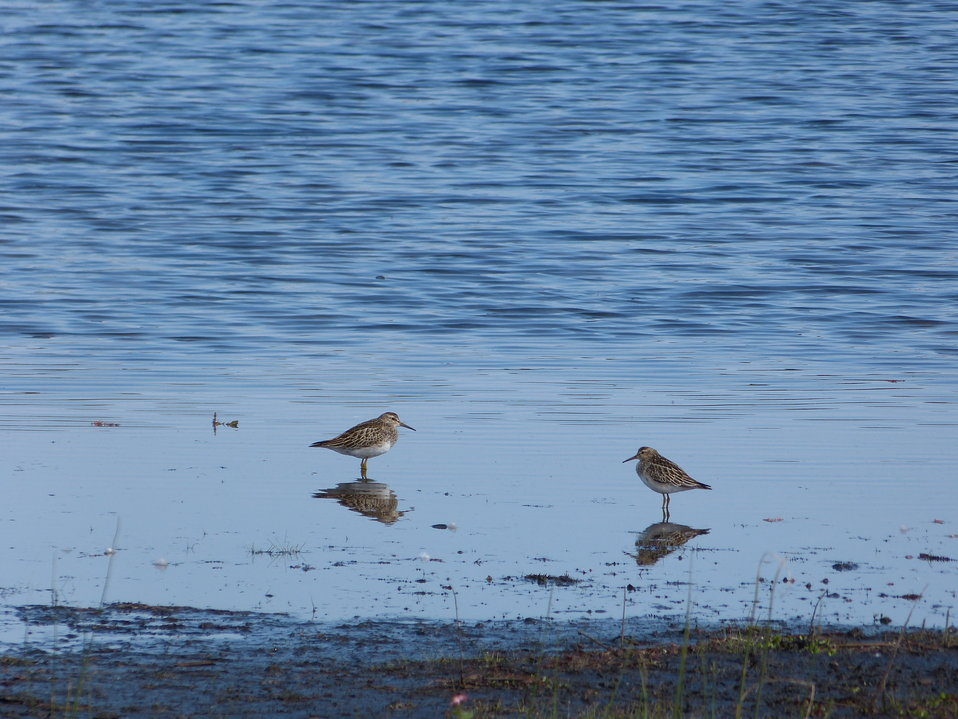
Shorebirds

At Mattamuskeet National Wildlife Refuge in North Carolina. The Refuge’s prime location along the Atlantic Flyway makes it a vitally important stopover for wintering waterfowl.